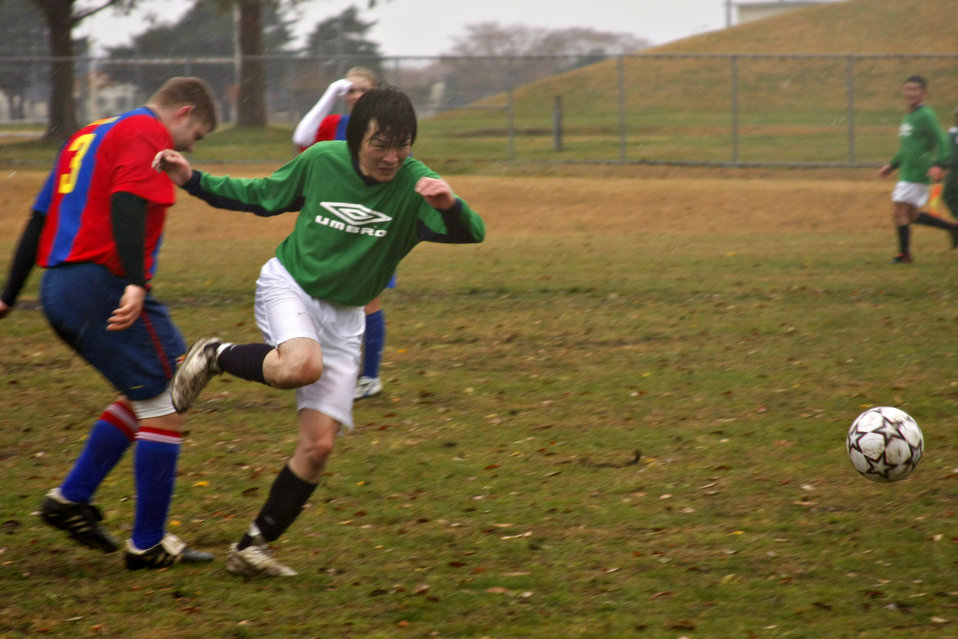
Misawa team forges international friendships on the field

Daniel Leasher and Daisuke Ishikawa from the Misawa Dolphins fight for the ball during an exhibition game between the Dolphins and Misawa United Nov. 18 at Misawa Air Base, Japan. Leasher is a staff sergeant assigned to the 35th Maintenance Squadron at Misawa AB.